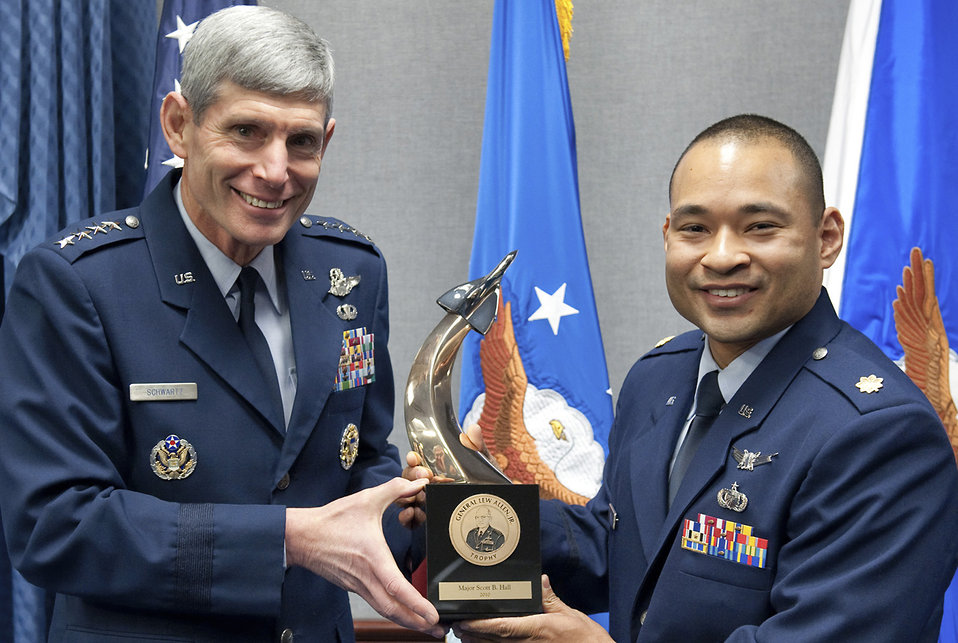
2010 General Lew Allen Jr. trophy

Air Force Chief of Staff Gen. Norton Schwartz presents the 2010 General Lew Allen Jr. Award to Maj. Scott Hall during a ceremony Jan. 4, 2011, in the Pentagon. The award is presented annually to an officer and to an NCO working in aircraft, munitions or missile maintenance and directly involved in aircraft sortie generation. The award's namesake served as the Air Force Chief of Staff from 1978 to 1982. Major Hall was honored for his work as the 20th Aircraft Maintenance Squadron maintenance operations officer at Shaw Air Force Base, S.C.